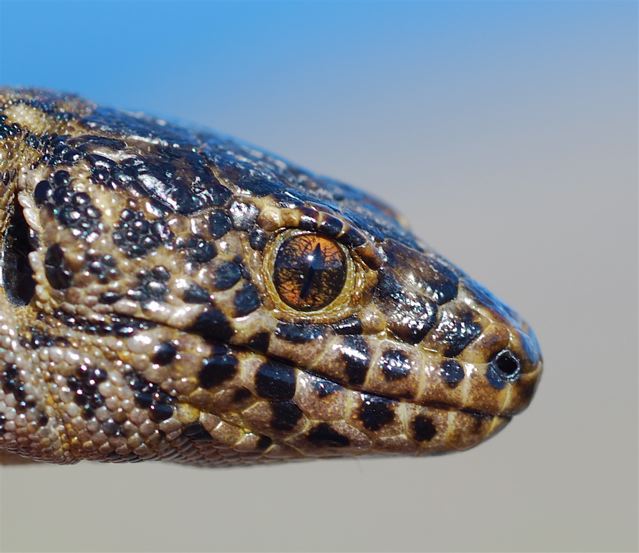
Island Night Lizard

The island night lizard (Xantusia riversiana) inhabits three of the Channel Islands off the coast of southern California.